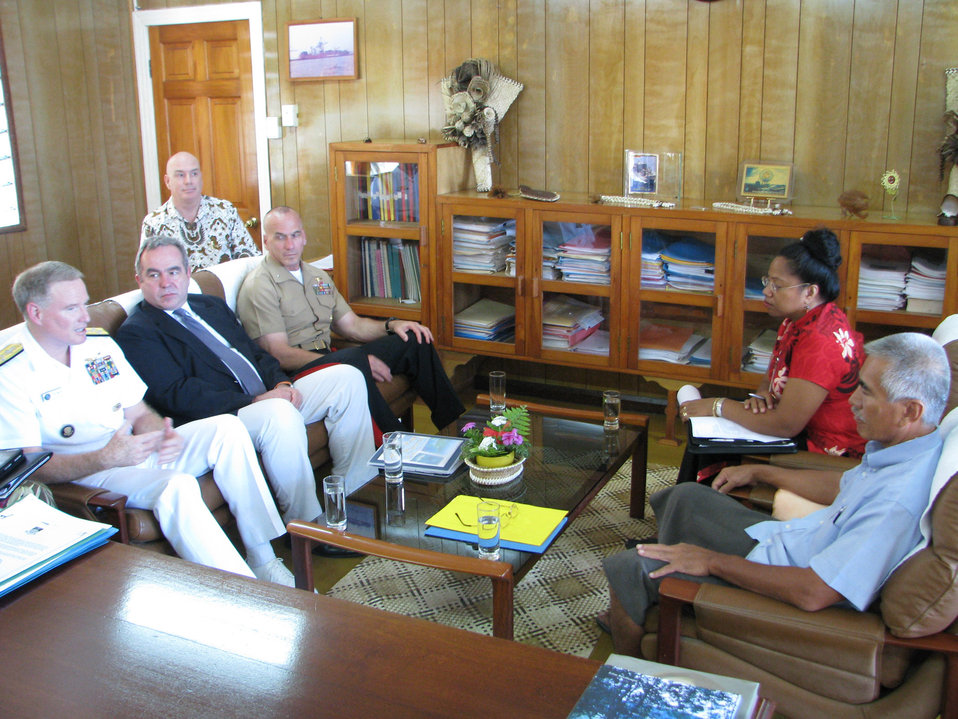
Assistant Secretary Campbell, Adm. Walsh, Brig. Gen. Simcock, and Deputy Chief of Mission Pruett Meet With Kiribati President Tong and Kiribati Foreign Affairs Secretary Lambourne

Assistant Secretary for East Asian and Pacific Affairs Kurt Campbell, left center, Adm. Patrick Walsh, commander of U.S. Pacific Fleet, left, Office of the Secretary of Defense South/Southeast Asia Principal Director Brig. Gen. Richard Simcock, and U.S. Embassy Deputy Chief of Mission Richard Pruett meet with Kiribati President Anote Tong, right, along with Secretary of Foreign Affairs Tessie Lambourne, in Kiribati on June 27, 2011. Kiribati is the first stop on a visit of South Pacific nations for a U.S. delegation that includes Assistant Secretary Campbell, Walsh, Simcock, and U.S. Agency for International Development (USAID) Assistant Administrator Nisha Biswal.